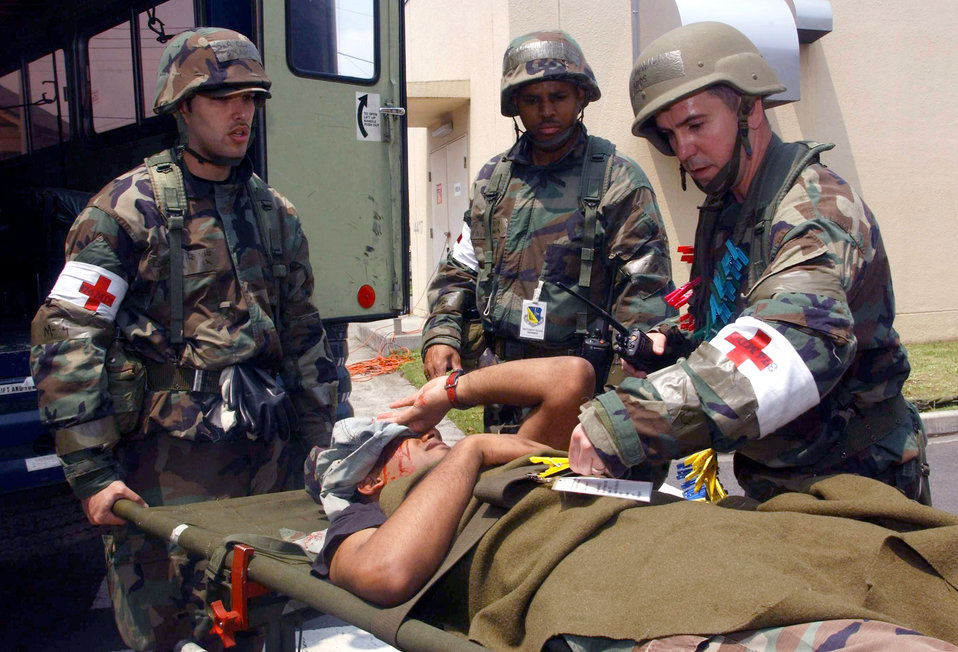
Critical care

YOKOTA AIR BASE, Japan (AFPN) - Capt. Anthony Jarecke (right) evaluates the simulated injuries of a patient while Airman 1st Class Carlos Claudio (left) and Staff Sgt Keith Kinmon look on during an operational readiness exercise here. The triage team, all members of the base's 374th Medical Group, treated numerous people with various simulated injuries during the training.